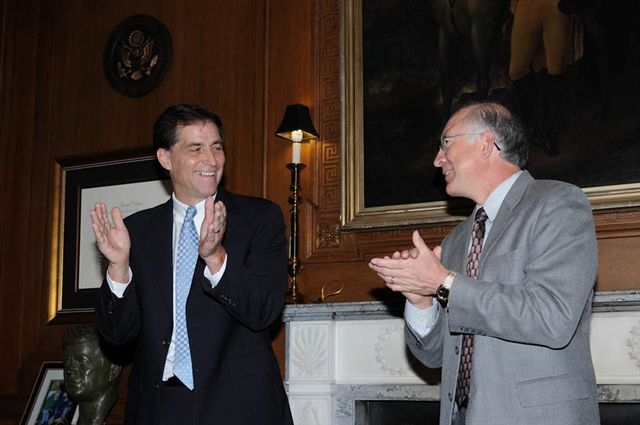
Dan Ashe Confirmed as 16th Director of U.S. Fish and Wildlife Service

Secretary Salazar and new director Dan Ashe begin the ceremony.